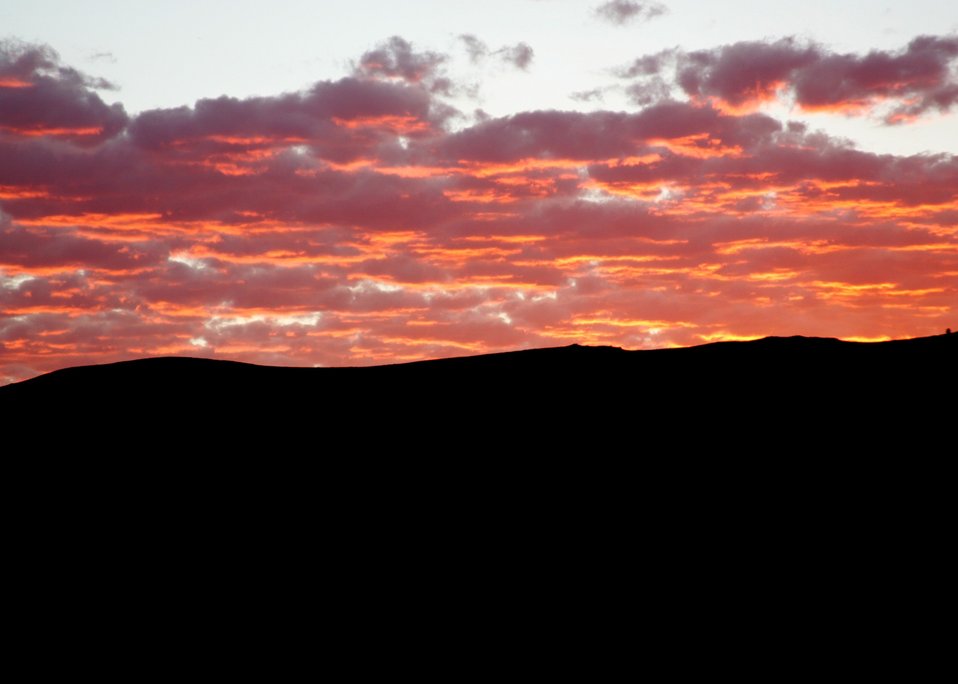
Sunrise on the Snake River Backcountry Byway.